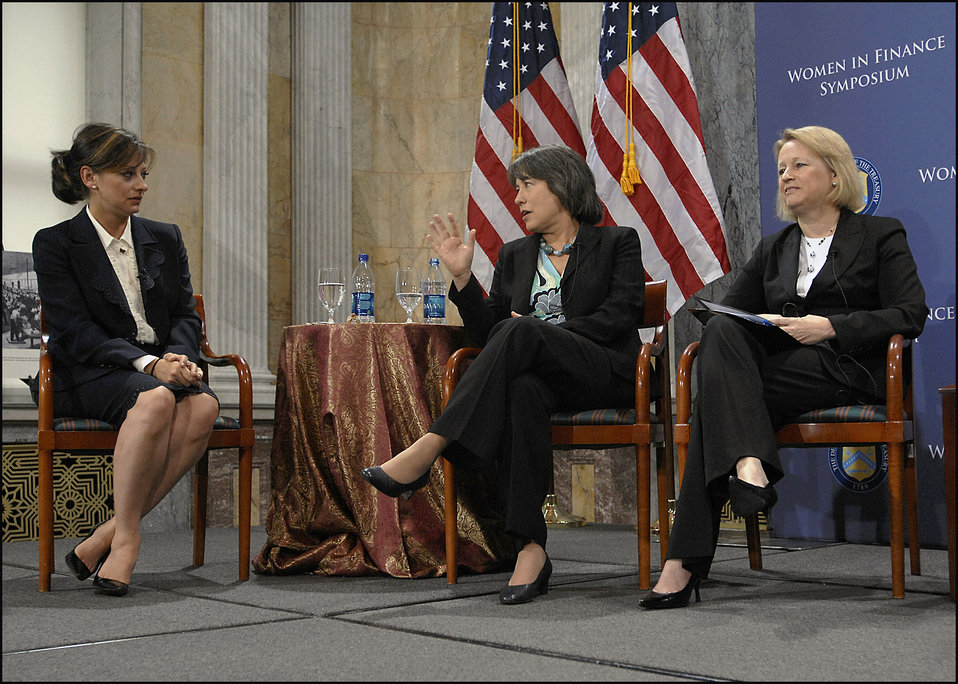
Women in Finance Symposium, 03/29/2010

Maria Bartiromo of CNBC, FDIC Chair Sheila Bair, and SEC Chair Mary Schapiro at the Women in Finance Symposium, March 29, 2010.